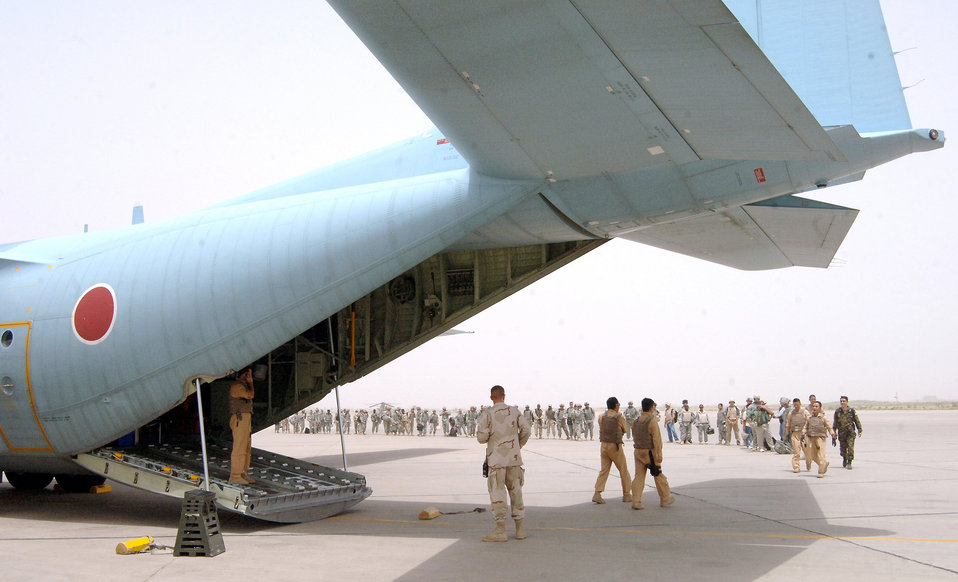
Japanese C-130 lands at Sather

A Japan Air Self Defense Force C-130, painted blue for its affiliation with the United Nations, sits on the ramp at Sather Air Base, Iraq, as coalition servicemembers and civilians wait to board it July 31. This marked the first time a Japanese C-130 landed at Sather on Baghdad International Airport. The Japanese are now flying into Sather on a regular basis.